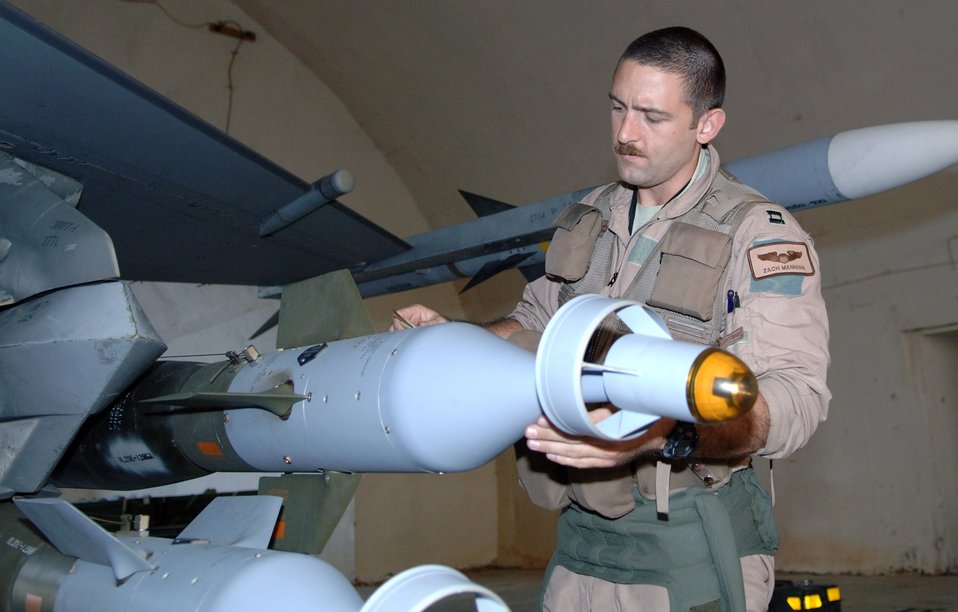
Dec. 18 airpower summary: Guided bomb units hit on target

Capt. Zach Manning inspects a guided bomb unit during his pre-flight inspection at Balad Air Base, Iraq. Captain Manning, a 4th Expeditionary Fighter Squadron F-16 pilot, is deployed from Hill Air Force Base, Utah.